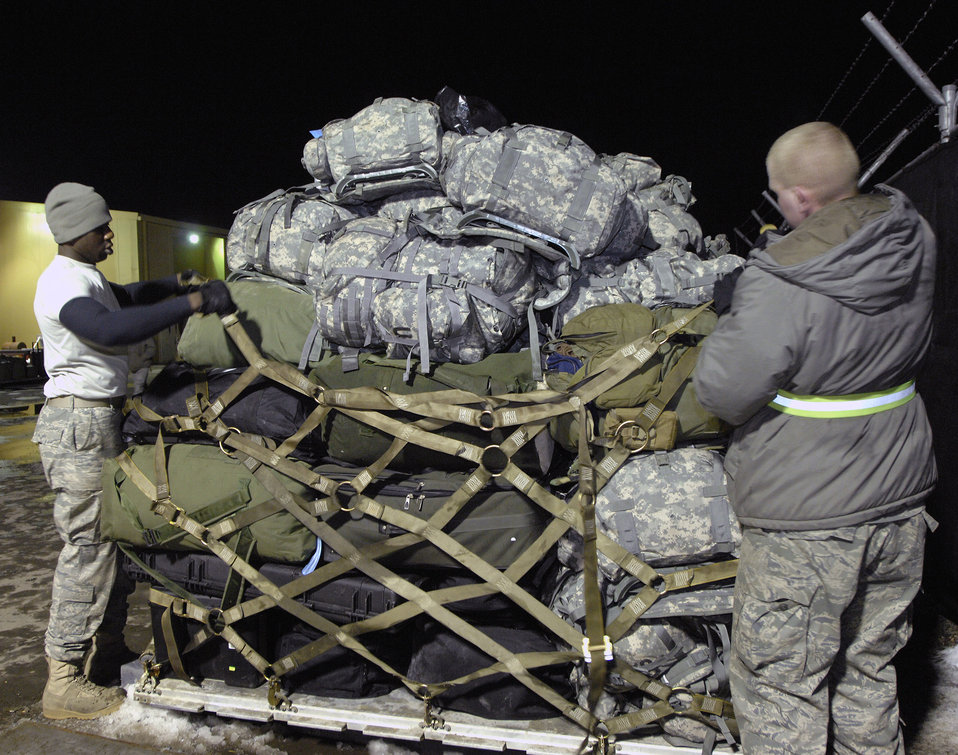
Manas members continue to support coalition operations

Airmen 1st Class Shaun Brown (left) and Jake Moennich palletize duffle bags, backpacks and other deployment gear to be airlifted U.S. forces members being deployed to Afghanistan Feb. 4 at Manas Air Base, Kyrgyzstan. Manas AB serves as a mobility hub for operations in Afghanistan, providing daily refueling missions and supporting personnel and cargo transiting in and out of Afghanistan. Airman Brown and Moennich are both with the 376th Expeditionary Logistics Readiness Squadron and are deployed from McConnell Air Force Base, Kan.